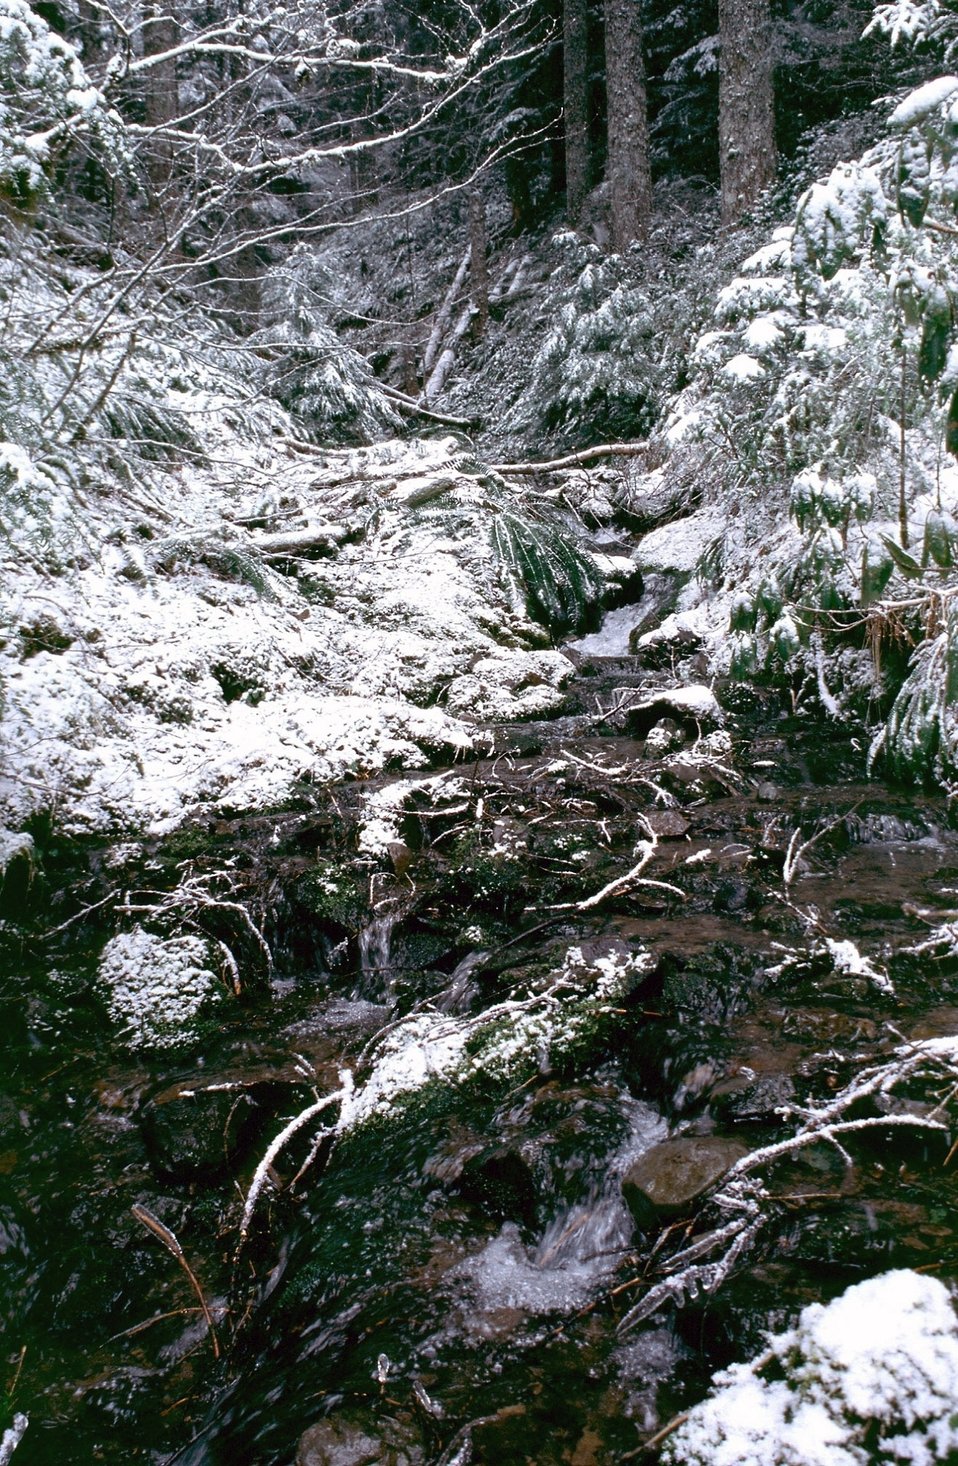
Mid Winter forest scene in the Mollala Corridor.